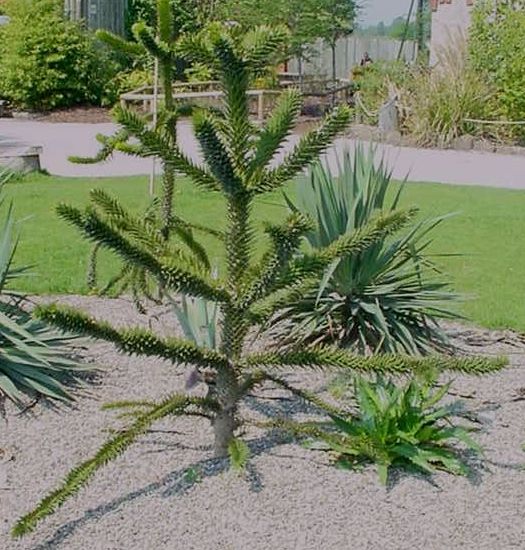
Plants at en:Chester Zoo, England.